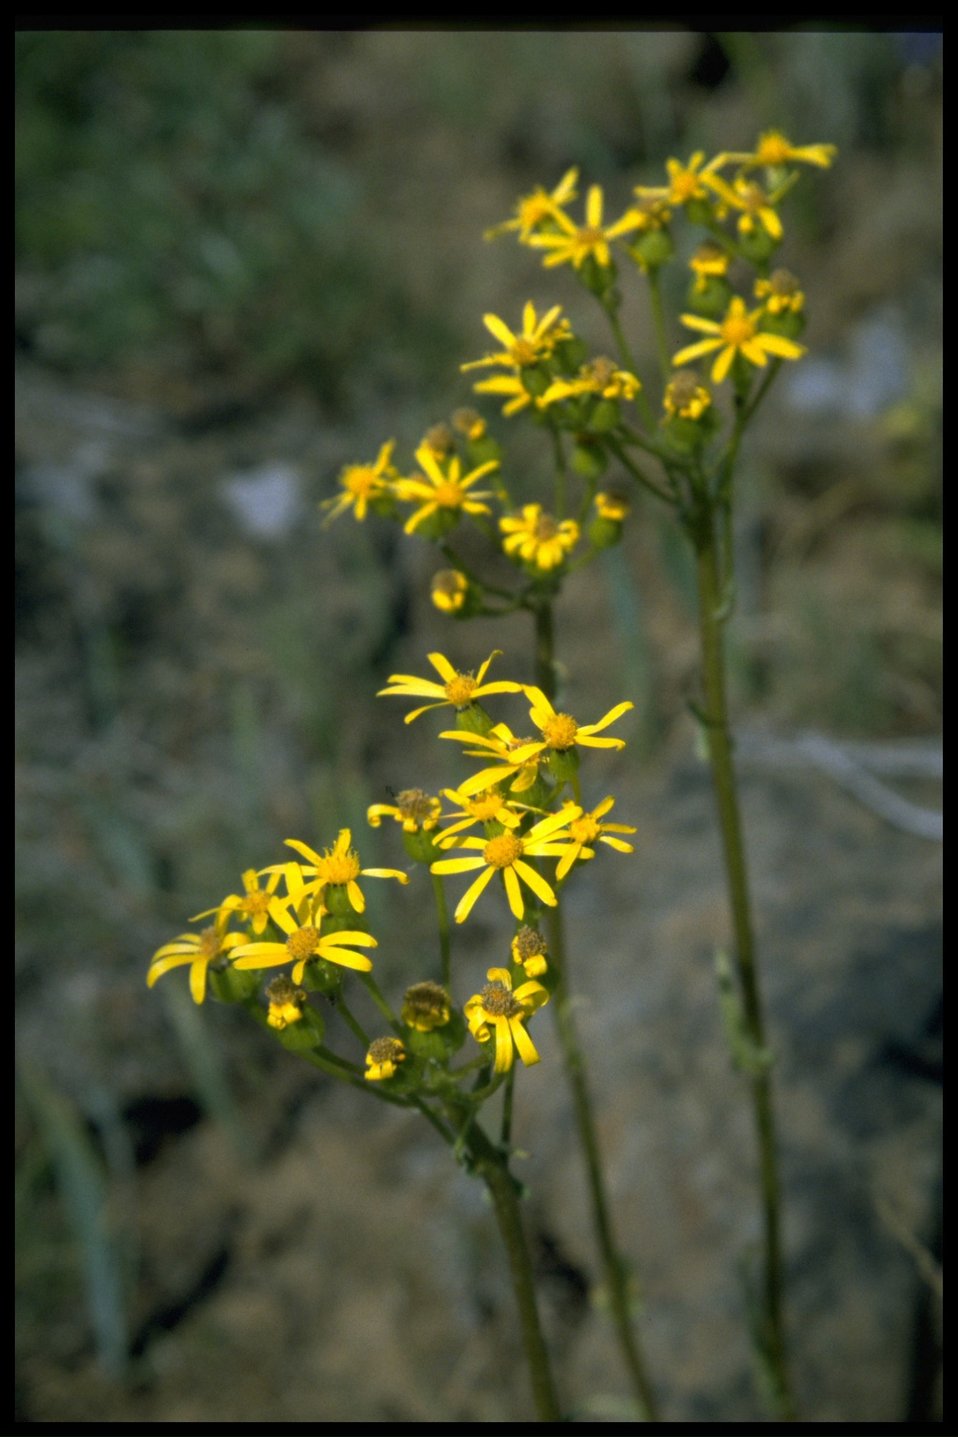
Medium shot of Tapertip Hawksbeard wildflowers.